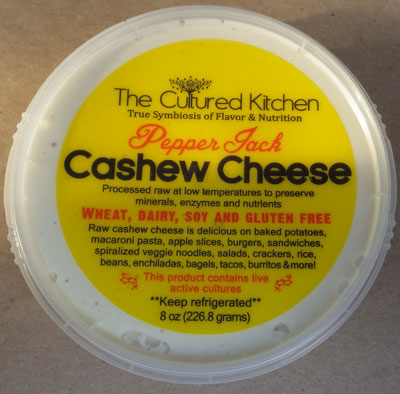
RECALLED – Non-dairy cashew cheese products

ecember 31, 2013 – The Cultured Kitchen® Voluntarily Recalls Cashew Cheese Due To Possible Risk Of Contamination From Salmonella
Photos.